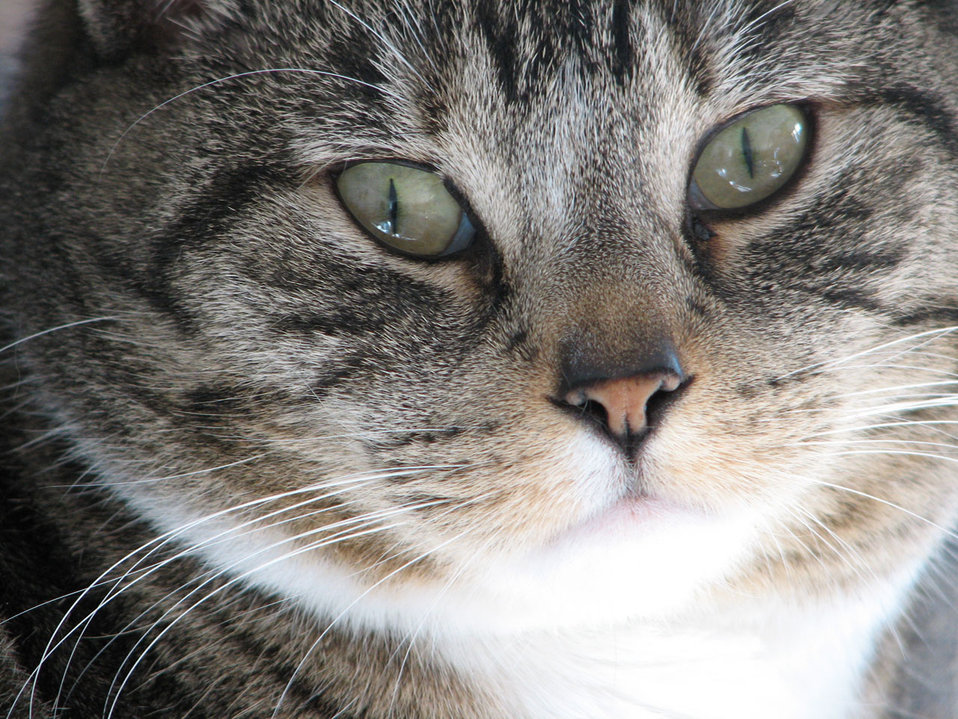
Cats eyes closeup

Close up of tabby cat and beautiful sad eyes.